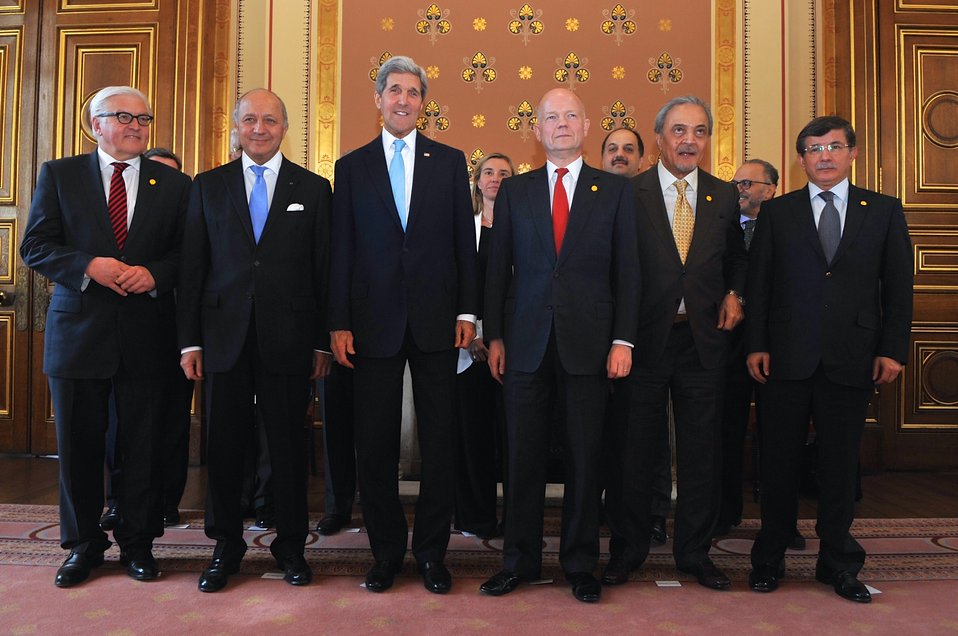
Secretary Kerry Meets With Counterparts in London

U.S. Secretary of State, British Foreign Secretary William Hague and their counterparts pose for a photo amid a series of ministerial meetings at the Foreign and Commonwealth Office in London, United Kingdom, on May 15, 2014.